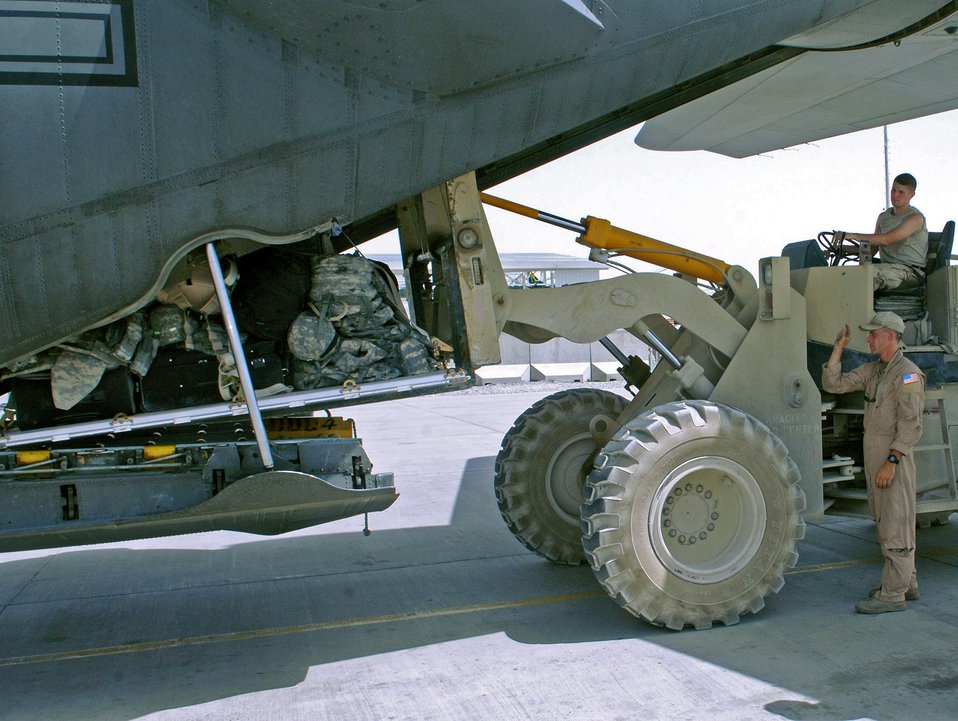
C-130 crews changing lives one mission at a time

Senior Airman Patrick Keefe (far right) directs a forklift carrying passenger luggage into the cargo area of a C-130 Hercules at Kandahar Airfield, Afghanistan. Airman Keefe is a 774th Expeditionary Airlift Squadron loadmaster deployed from Wyoming's Air National Guard from Cheyenne, Wyo.